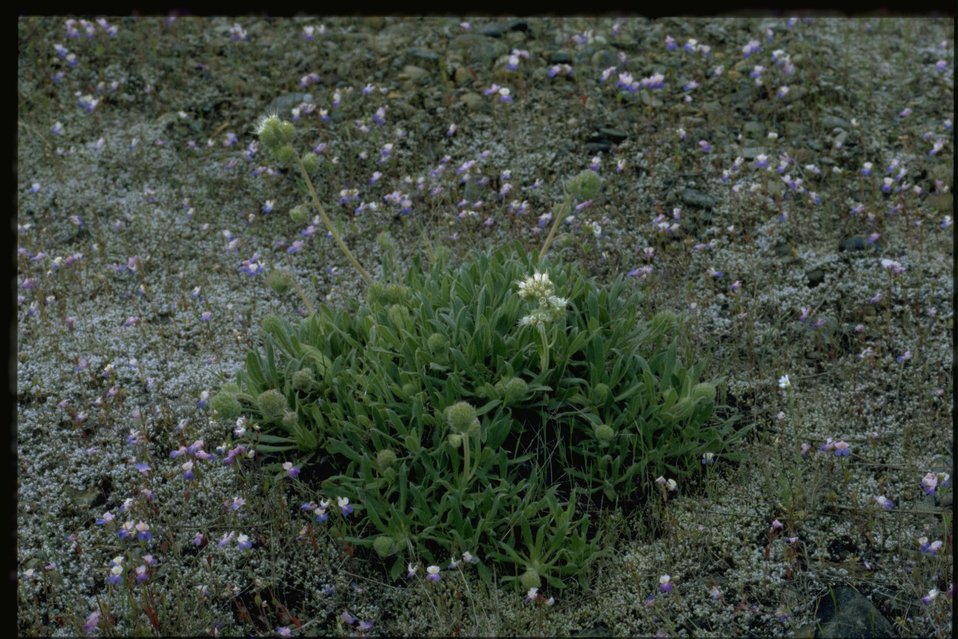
Medium shot of Phacelia corymbosa.